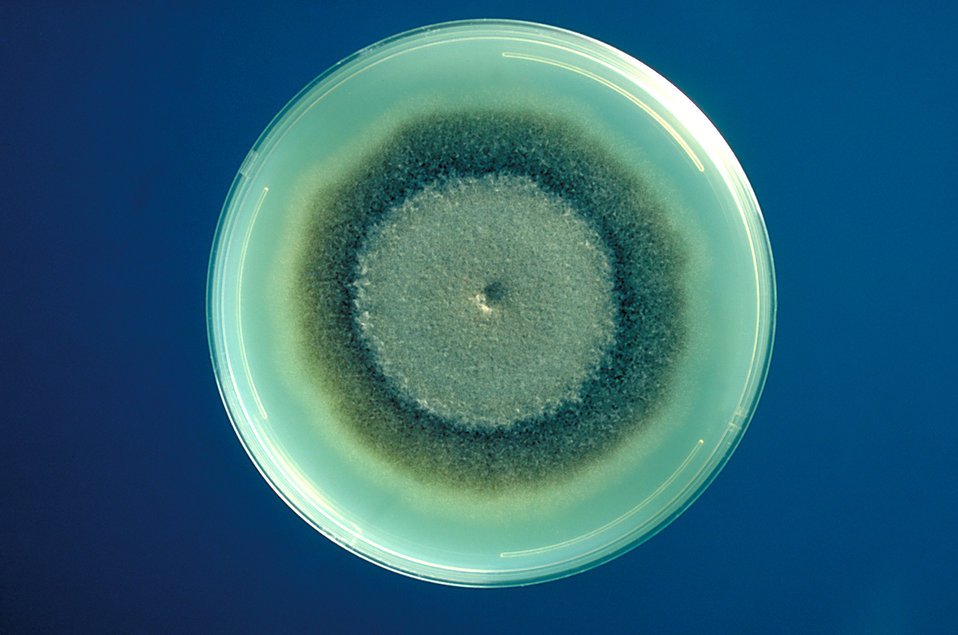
This was a plate culture of Exserohilum rostratum, a fungus, which causes Phaeohyphomycosis.